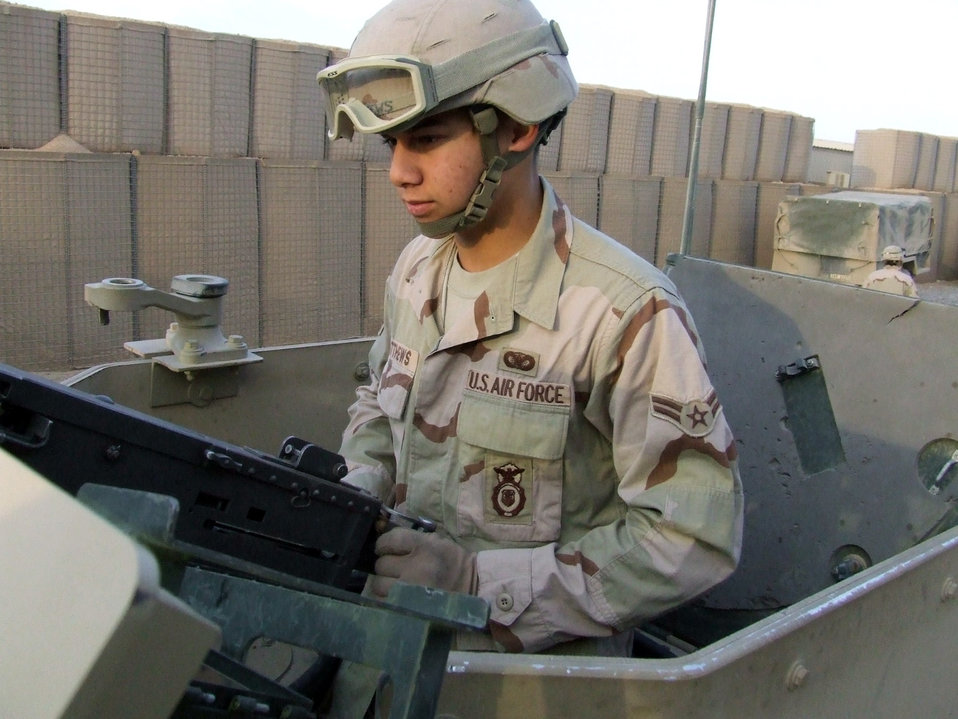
Airmen train Iraqi police

Airman 1st Class James Matthews checks his .50 caliber machine gun prior to convoy departure from Contingency Operating Base Speicher, Iraq. Deployed from the 96th Security Forces Squadron at Eglin Air Force Base, Fla., Airman Matthews is assigned to the 732nd Expeditionary Security Forces Squadron's Detachment 6. The detachment sends convoys out daily to assess the capability of Iraqi police stations in the Salah ad Din province.